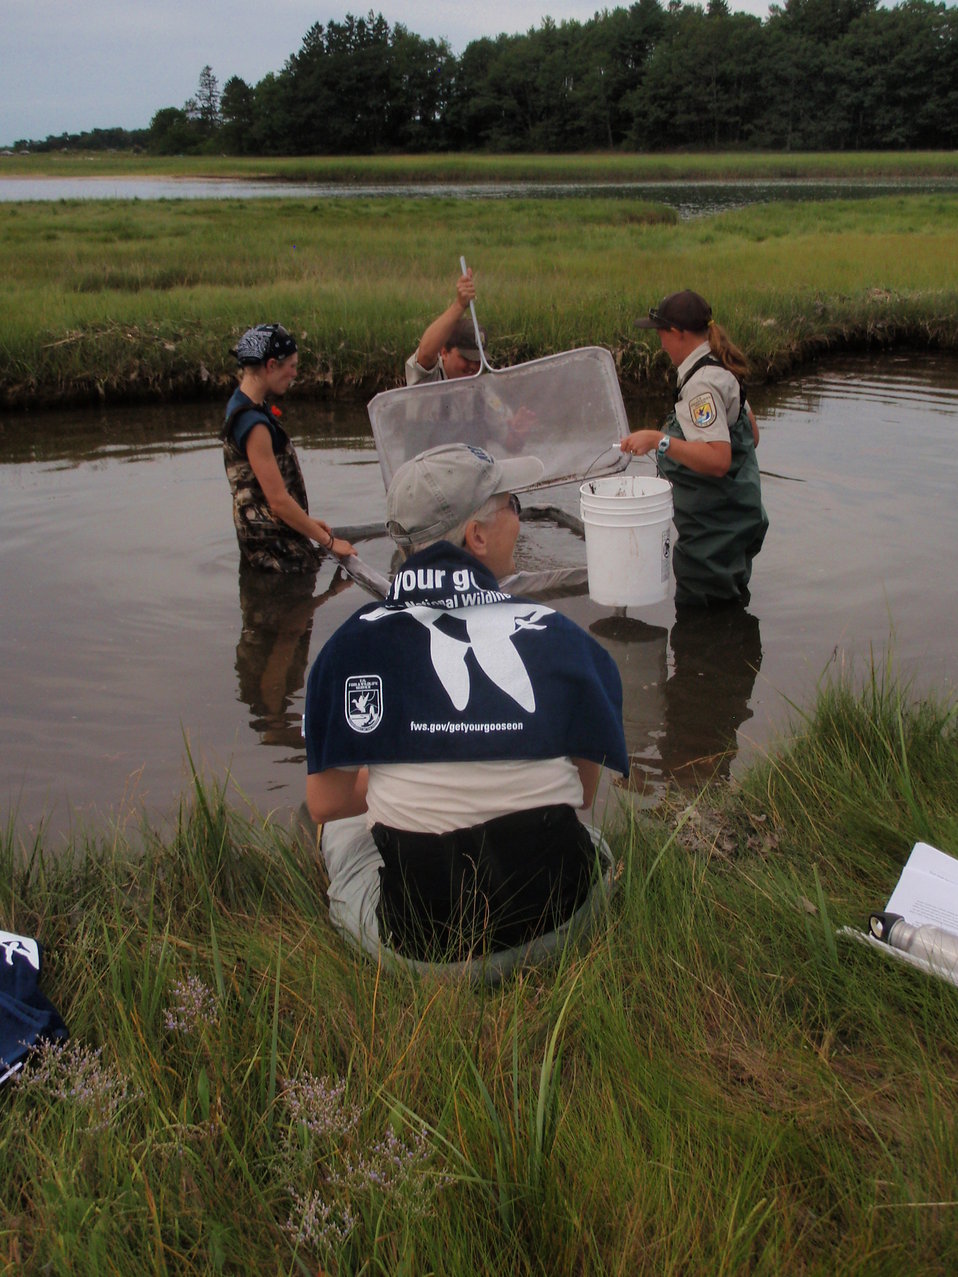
Get Your Goose On!

Nekton sampling during SMI training... GYGO!